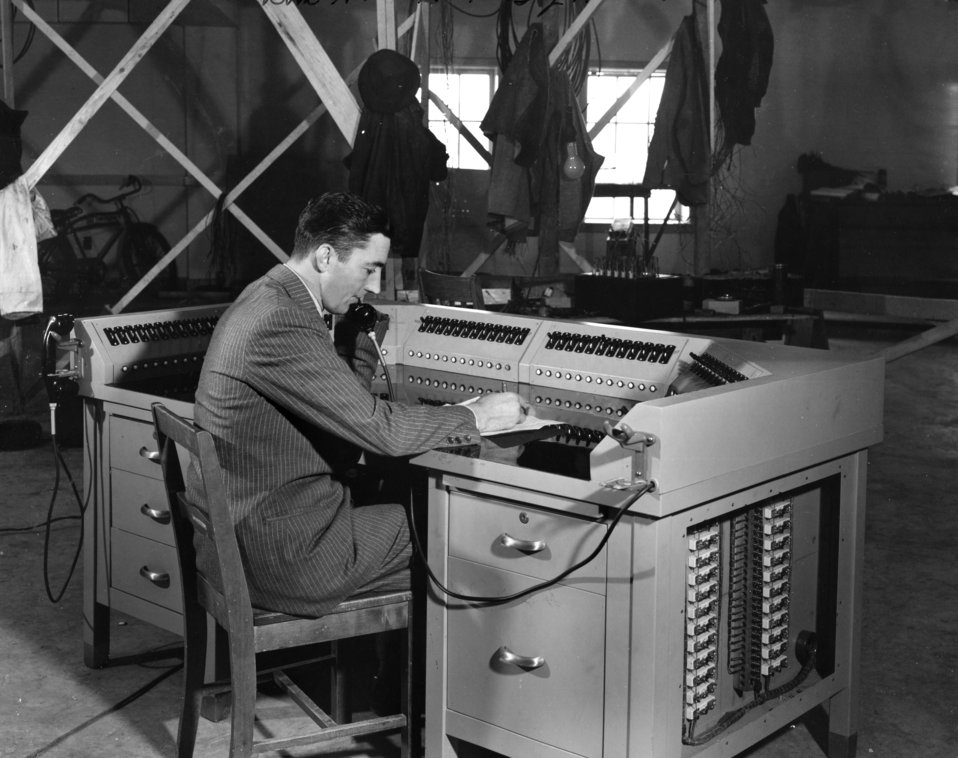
Operators Desk K-25 and K-27 Master Control Room

K-25-305 DOE photo Ed Westcott 11-7-1945 Oak Ridge Tennessee